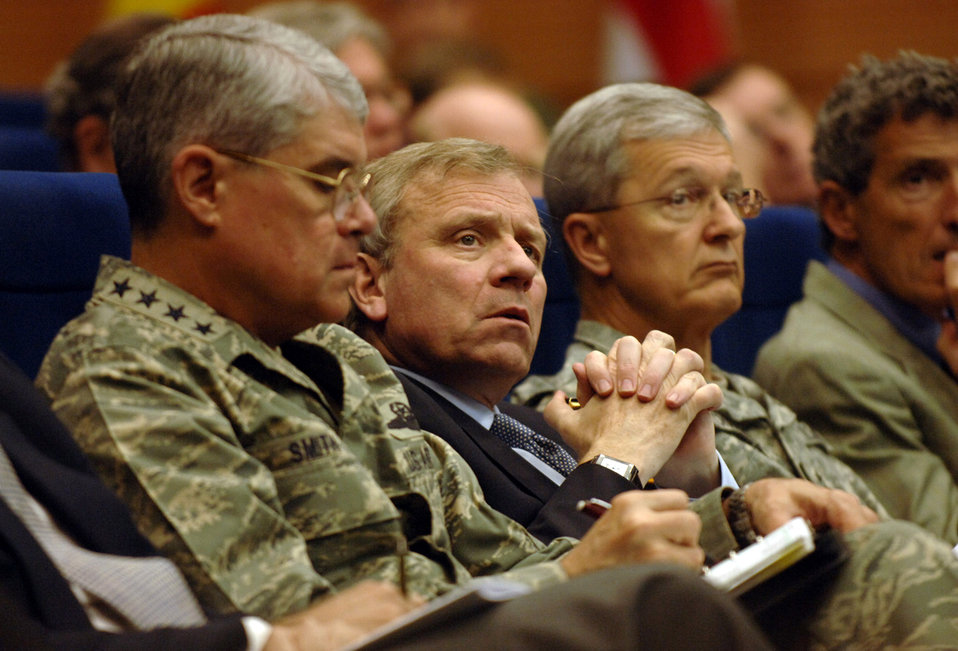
NATO Response Force works to improve communications

NATO Secretary General Jaap de Hoop Scheffer, flanked by Gen. Lance L. Smith (left) and Army Gen. John Craddock tune into a lecture May 4 during the week-long NATO Response Force Exercise Allied Reach '07 at Allied Air Component Command Headquarters at Ramstein Air Base, Germany. The NATO commanders, along with representatives from 26 NATO nations attended the exercise that examined the command and control, logistics and training of the NATO Response Force at the strategic and operational levels. General Smith is the commander, U.S. Joint Forces Command/NATO Supreme Allied Commander Transformation. General Craddock is the Supreme Allied Commander, Europe.